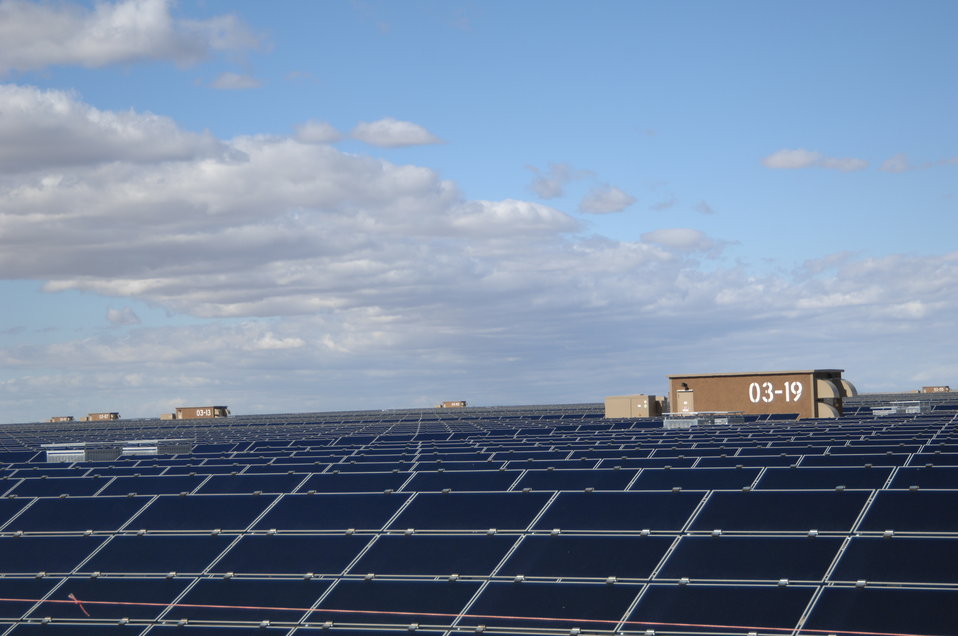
Solar Panels at Topaz Solar 6